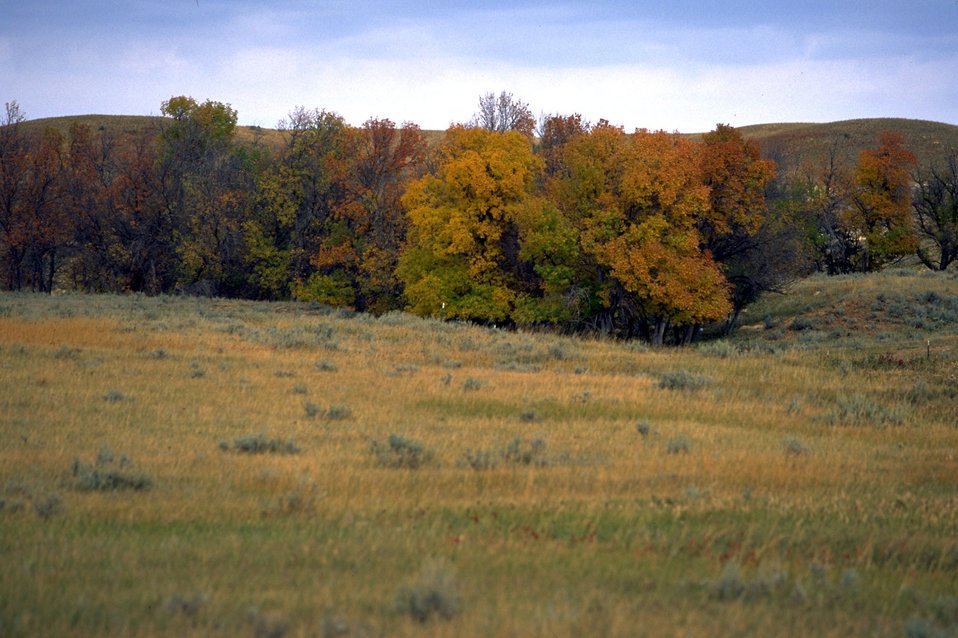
Autumn colors in the trees of eastern Montan